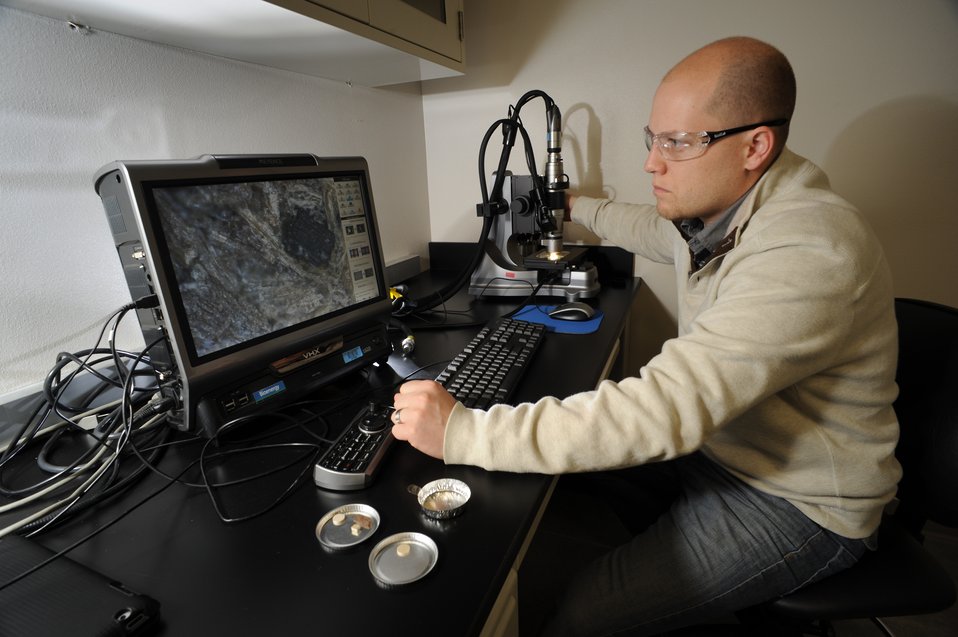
Idaho National Laboratory researchers are studying ways to economically process, transport and formulate raw biomass that will feed into a biofuels production facility.